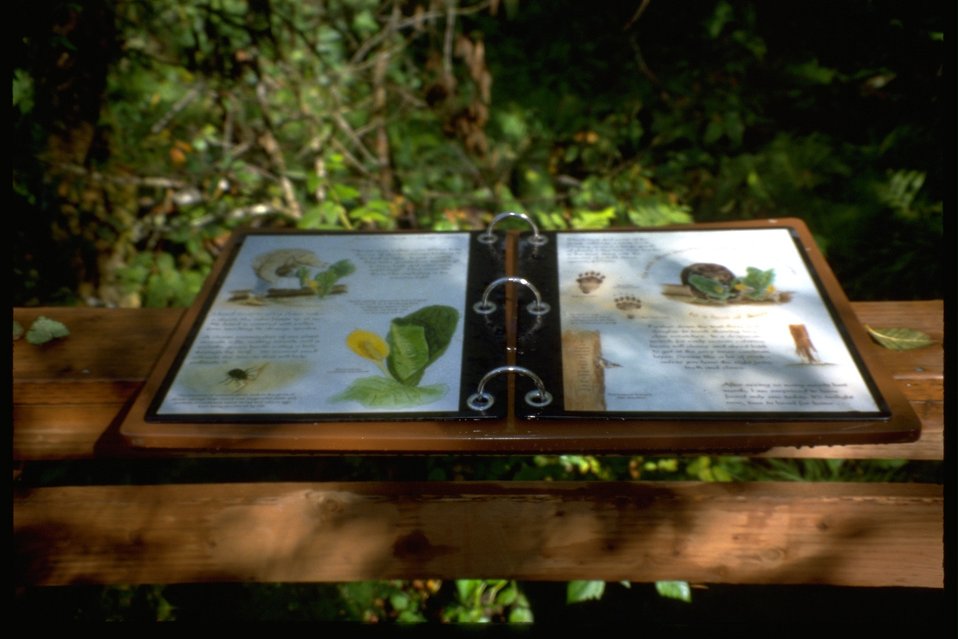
Interpretive Panels: Boardwalk Trail Journals.